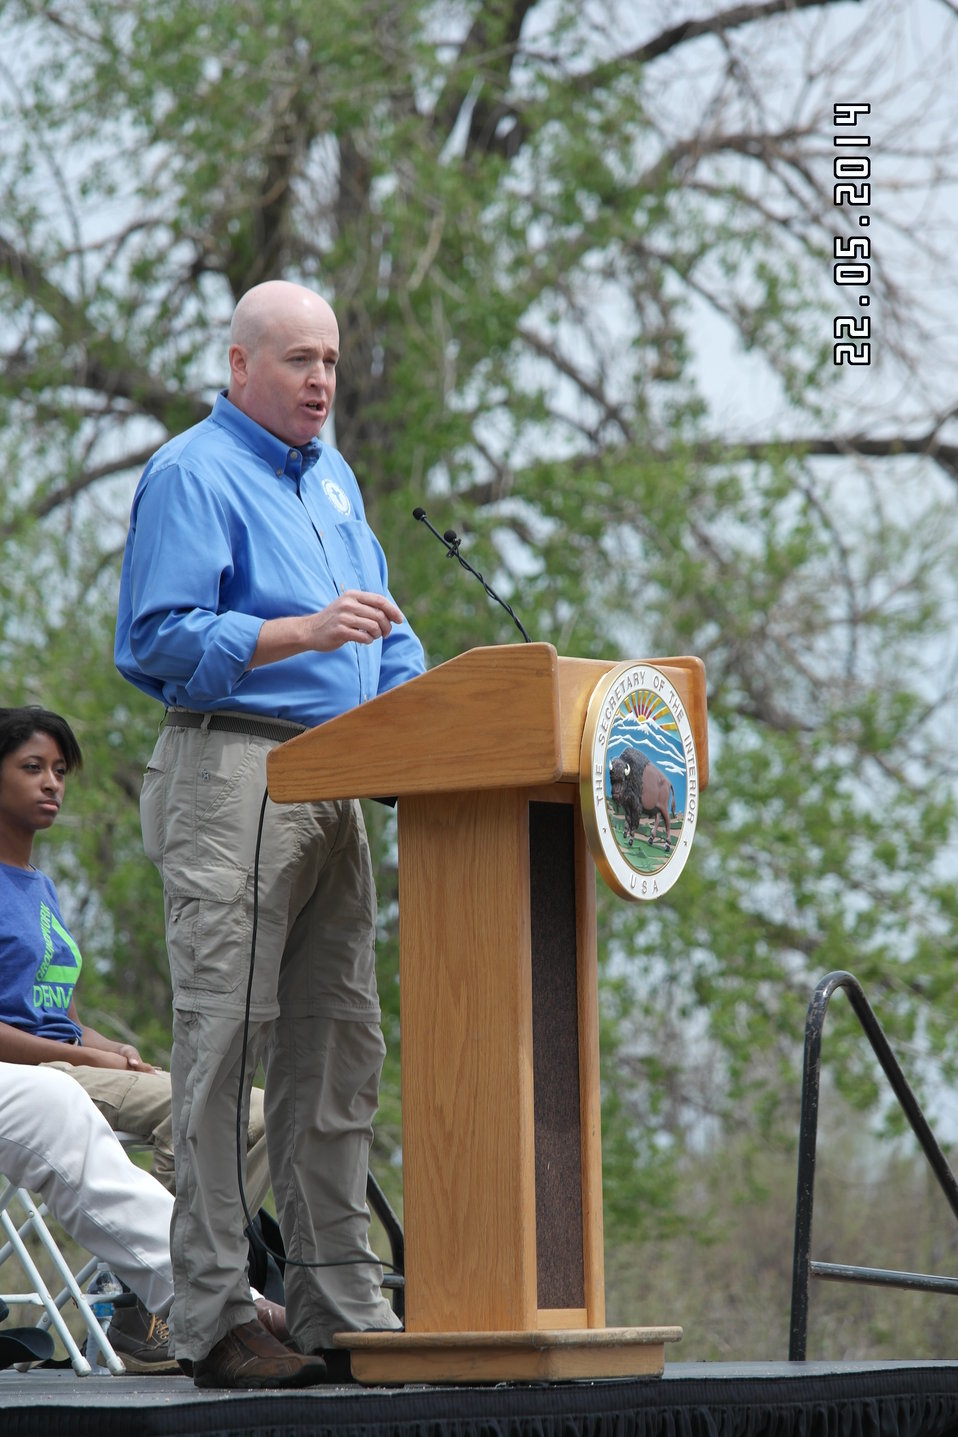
Secretary Jewell Announces $6.7 for Youth Conservation Jobs

Jewell made the announcement at an event at Rocky Mountain Arsenal National Wildlife Refuge outside Denver, Colorado, where she was joined by U.S. Department of Agriculture (USDA) Deputy Under Secretary for Natural Resources and the Environment Arthur “Butch” Blazer; Greg Knadle, Vice President for Government Relations of the National Fish and Wildlife Foundation (NFWF); Refuge Manager David Lucas and youth corps members of Groundwork Denver.